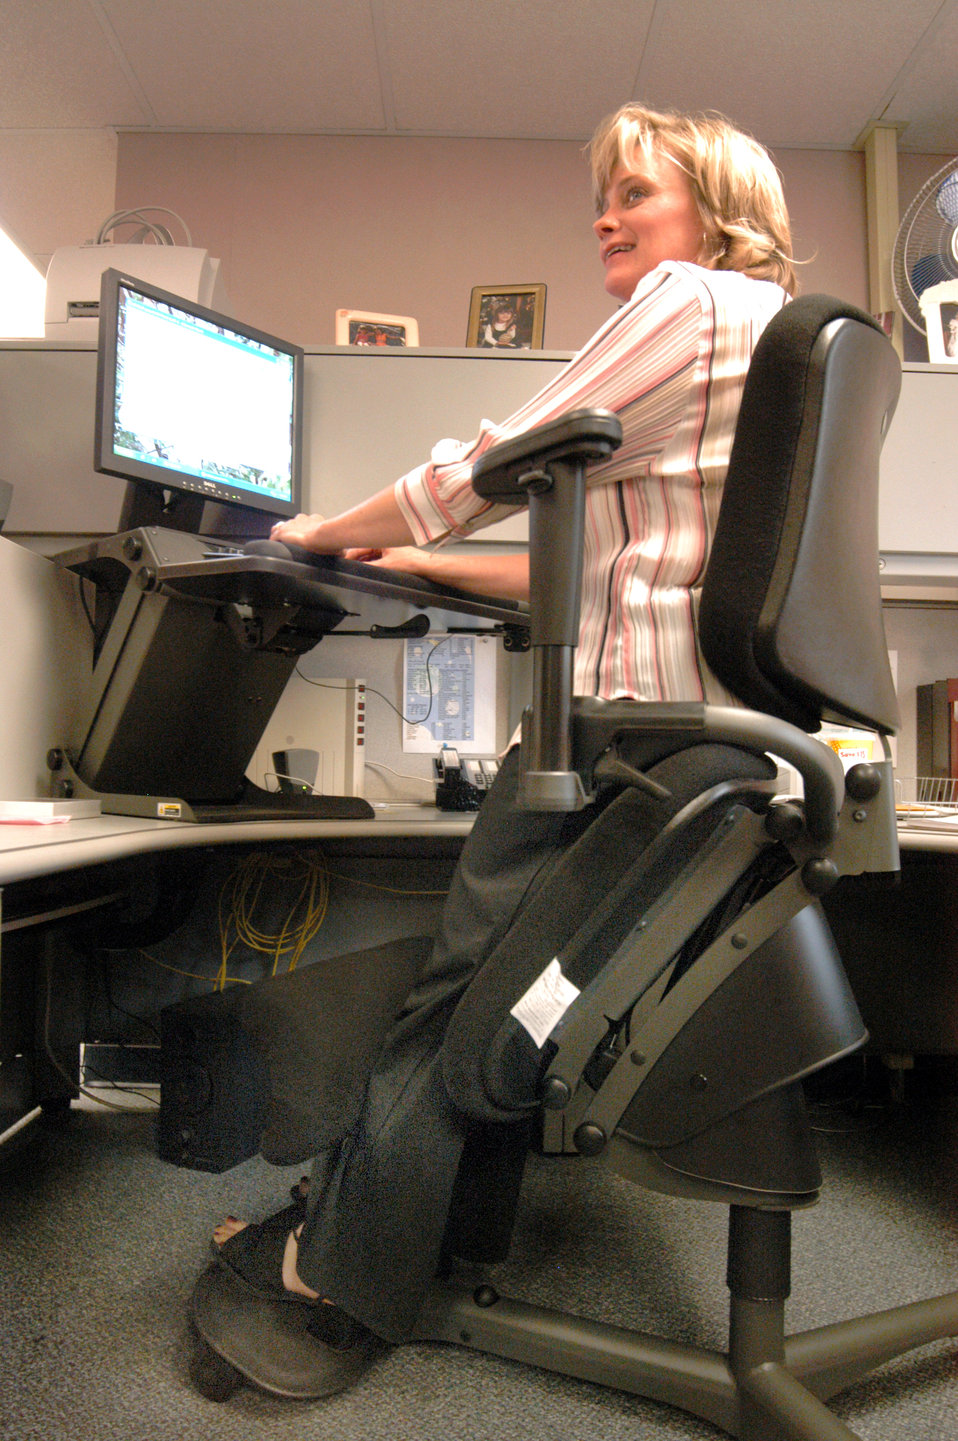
Standing up on the job

ROBINS AIR FORCE BASE, Ga. -- Melanie McDonald, a speech writer with the commander's action group here, uses a specially designed hydraulic chair and desk elevation system to help alleviate her back pain.